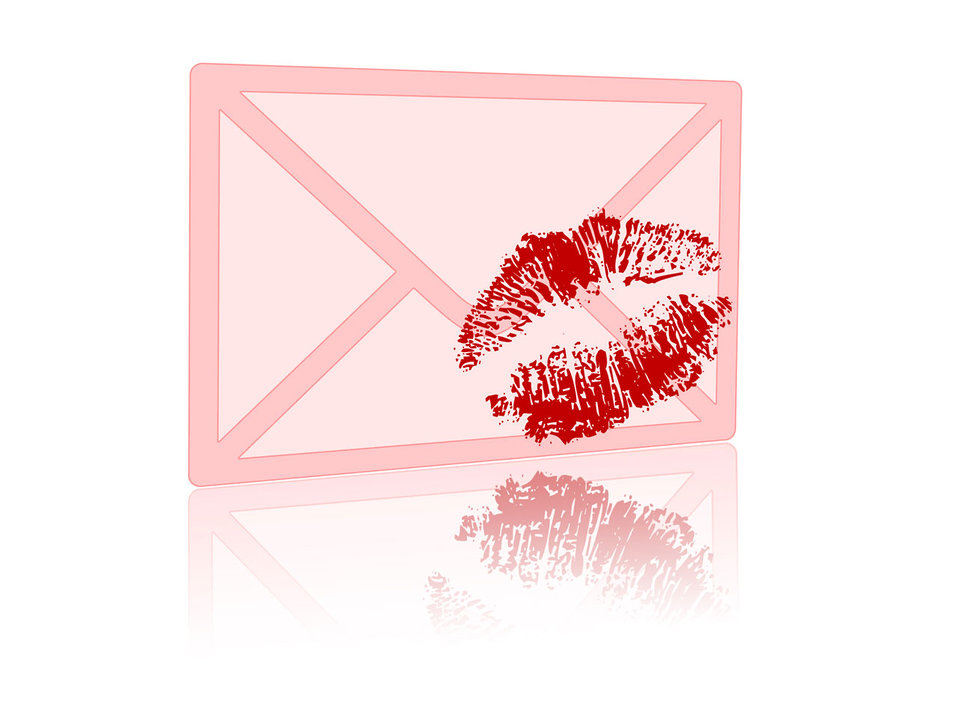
Kiss letter

Pink envelope with kiss on it.